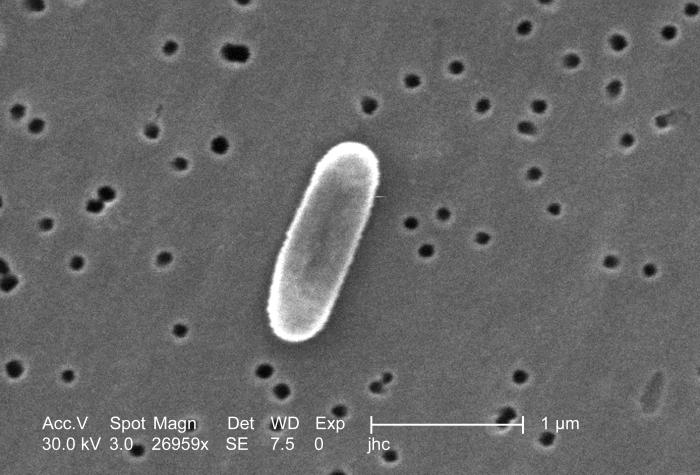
Magnified 26,959x, this scanning electron micrograph (SEM) depicted a highly enlarged view of a Ralstonia mannitolilytica bacterium, which was harvested from a pure culture.